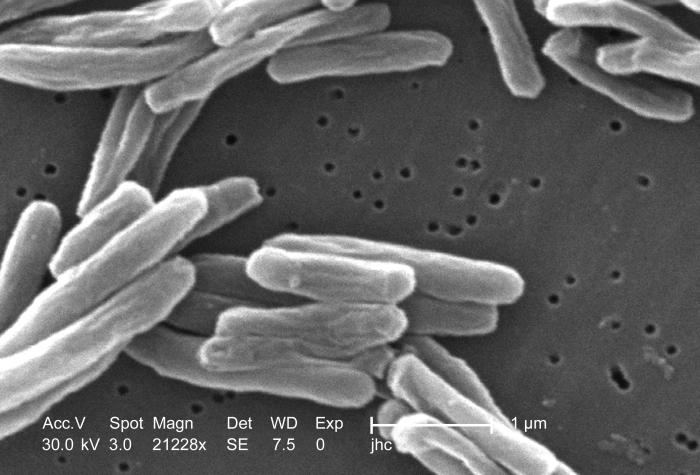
Under a high magnification of 21228x, this scanning electron micrograph (SEM) depicted some of the ultrastructural details seen in the cell wall configuration of a number of Gram-positive Mycobacterium tuberculosis bacteria. As an obligate aerobic organism M. tuberculosis can only survive in an environment containing oxygen. This bacterium ranges in length between 2 - 4�m, and a width between 0.2 - 0.5�m.